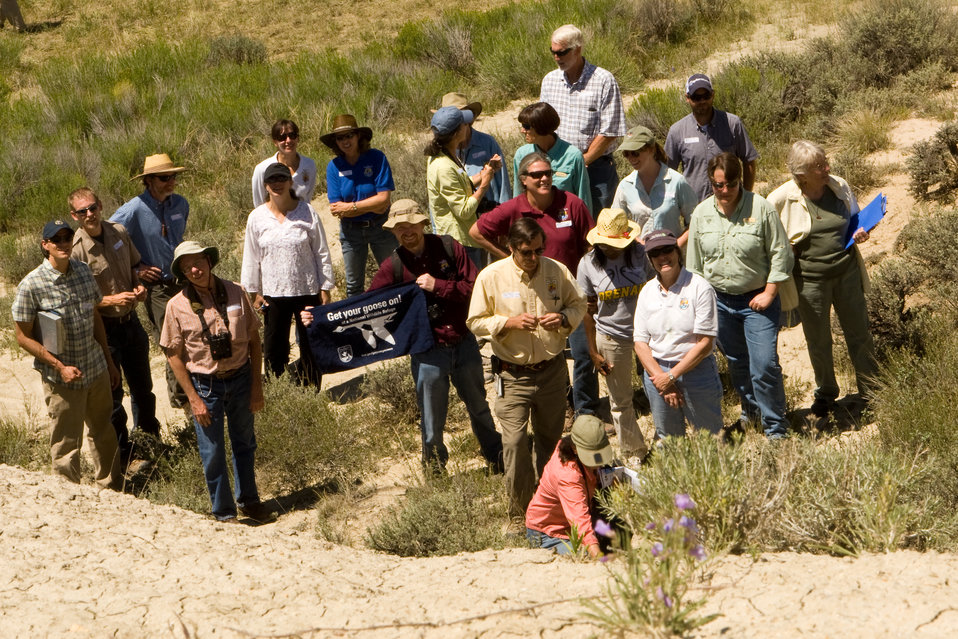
Colorado Rare Plant Conservation Initiative

The Colorado Rare Plant Conservation Initiative (RPCI) is a partnership of 23 statewide and regional agencies, private organizations, and academic institutions working to conserve 121 rare plants in Colorado. As part of these efforts the group developed the Colorado Rare Plant Conservation Strategy, developed Best Management Practices to reduce energy development impacts, addressed climate change, and developed focused strategies for the conservation of individual species at eight priority landscapes. The group has also worked to coordinate volunteer efforts for plant conservation across the state.